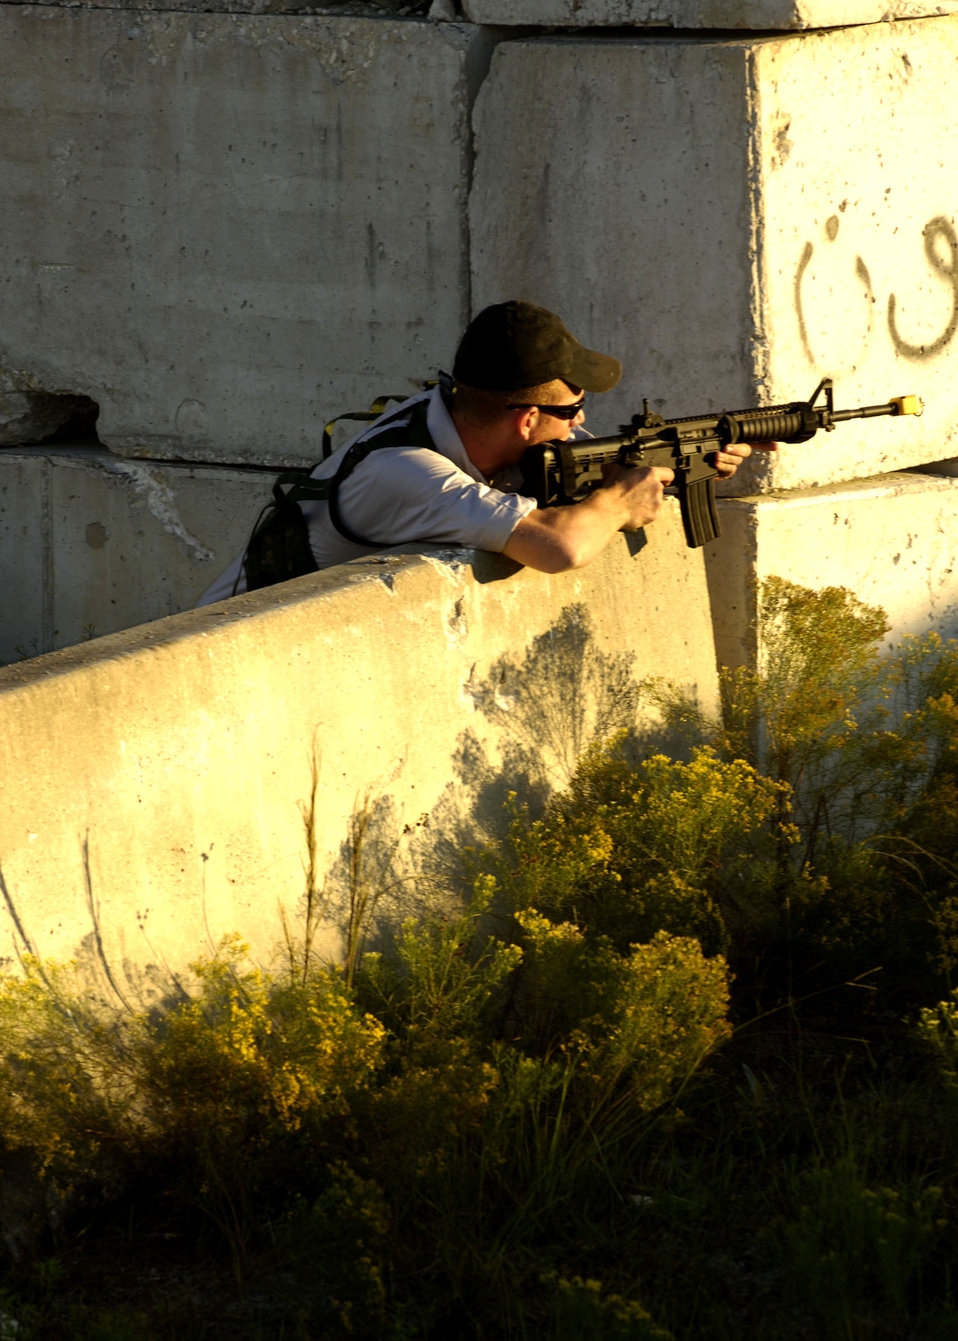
Warfighters gather to train for close-air-support operations

Airman Josh Lacki prepares to fire at